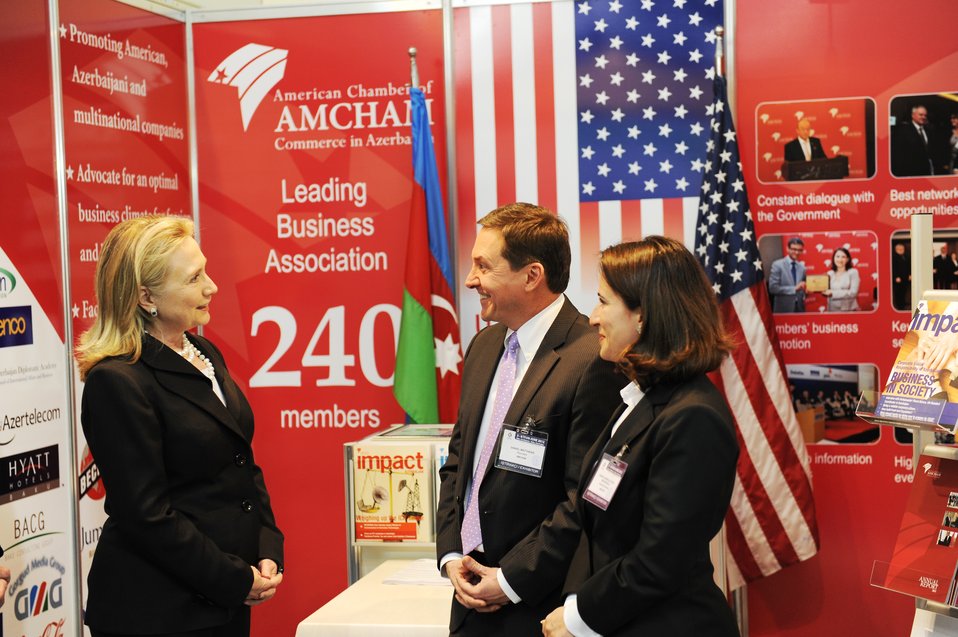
Secretary Clinton Visits the AmCham in Baku

U.S. Secretary of State Hillary Rodham Clinton visits the American Chamber of Commerce in Baku, Azerbaijan, on June 6, 2012.